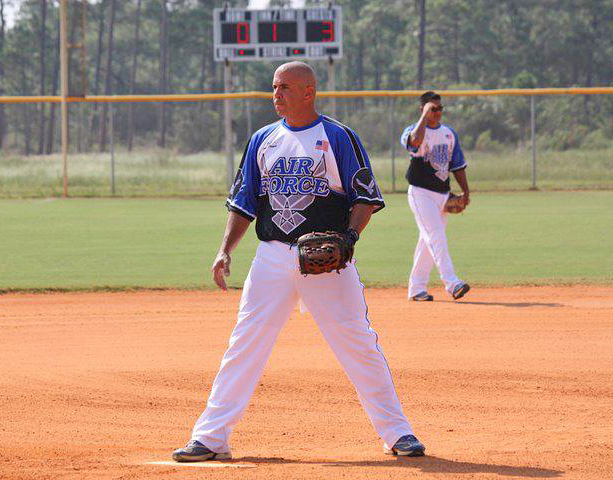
Air Force softball

Master Sgt. Tony Patrick warms up prior to an Air Force men's softball game.